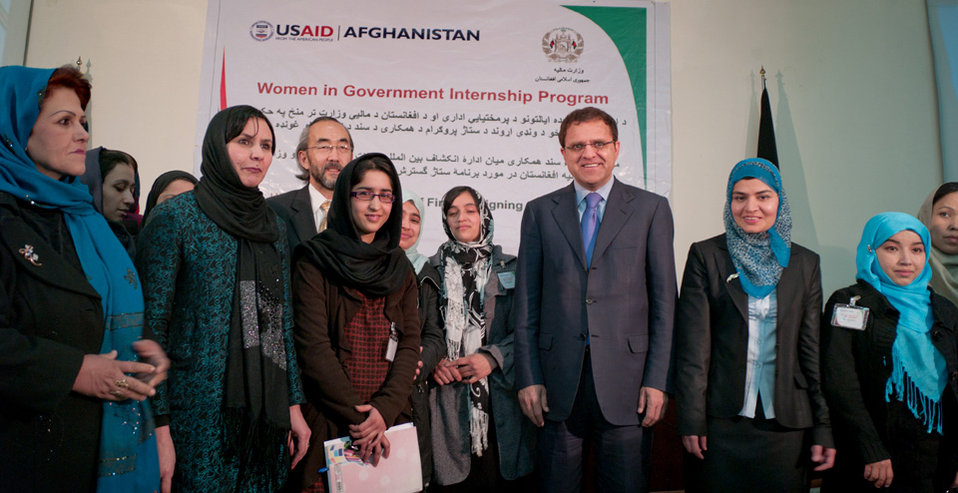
Image 24 3:18:12